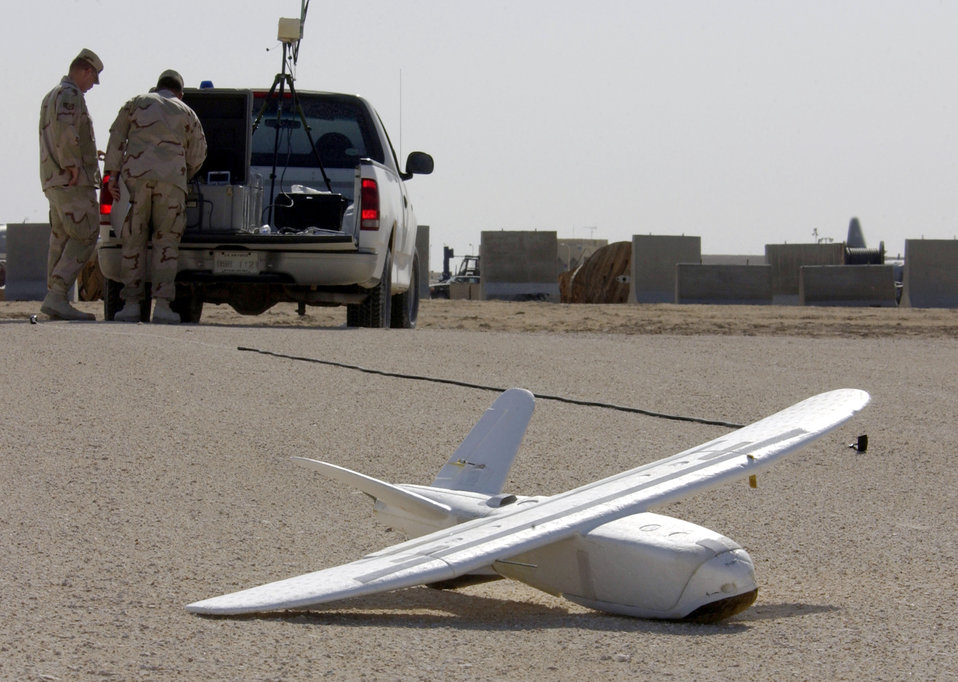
Getting ready to soar

SOUTHWEST ASIA -- A Desert Hawk surveillance system waits to go to work at a forward-deployed location here. The Desert Hawk is a 7-pound airplane equipped with a Global Positioning System and both day and night camera capabilities.